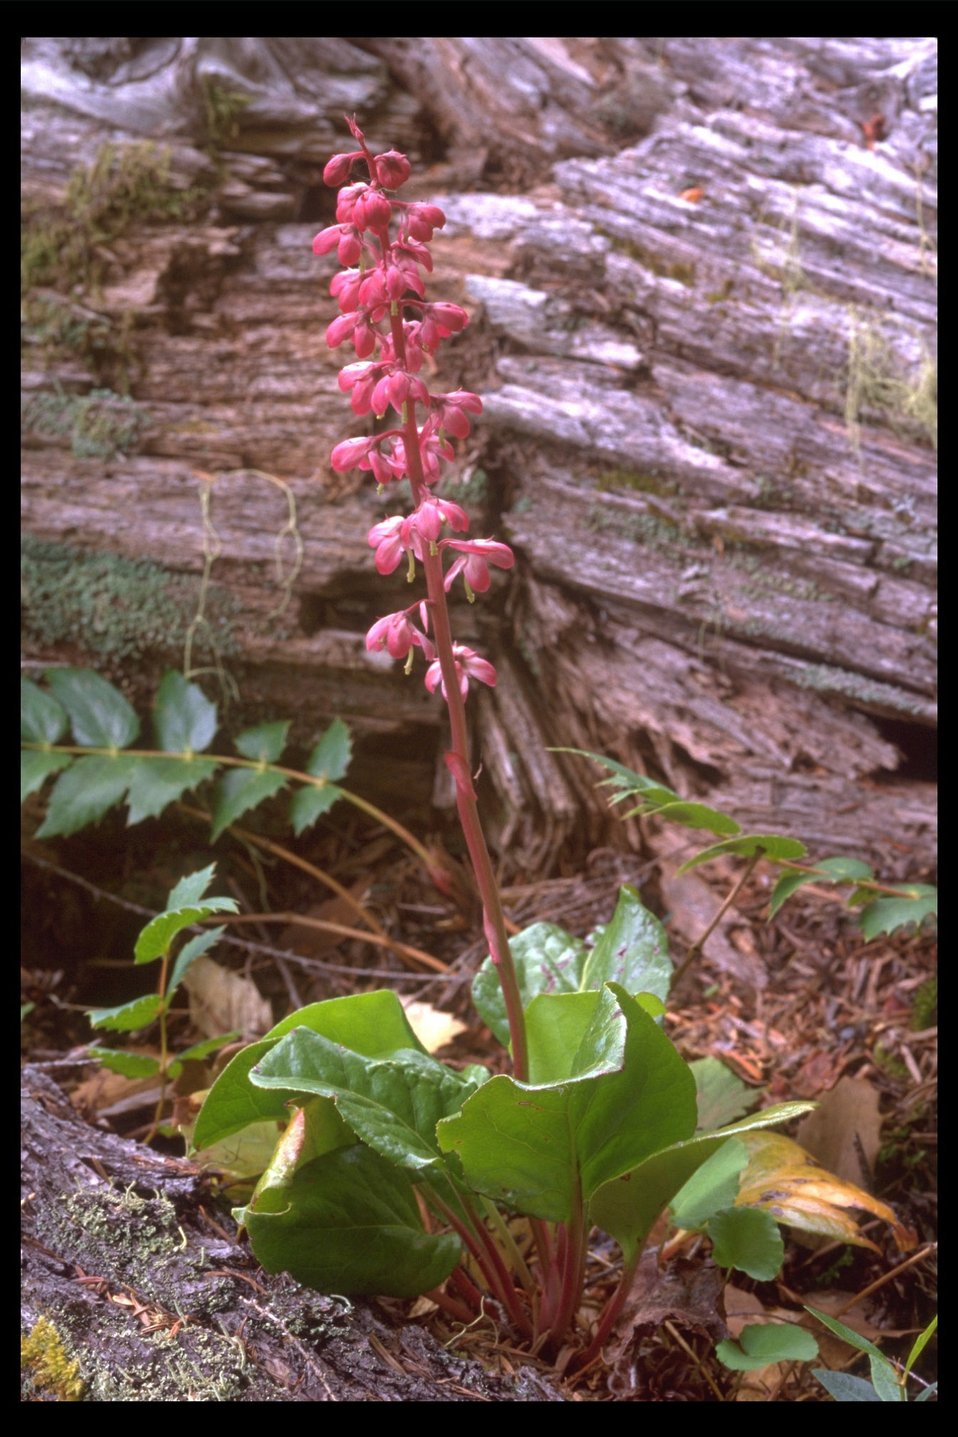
Pink Wintergreen, also called the Pink Pyrola (Pyrola asarifolia) at Upper Trail Creek.